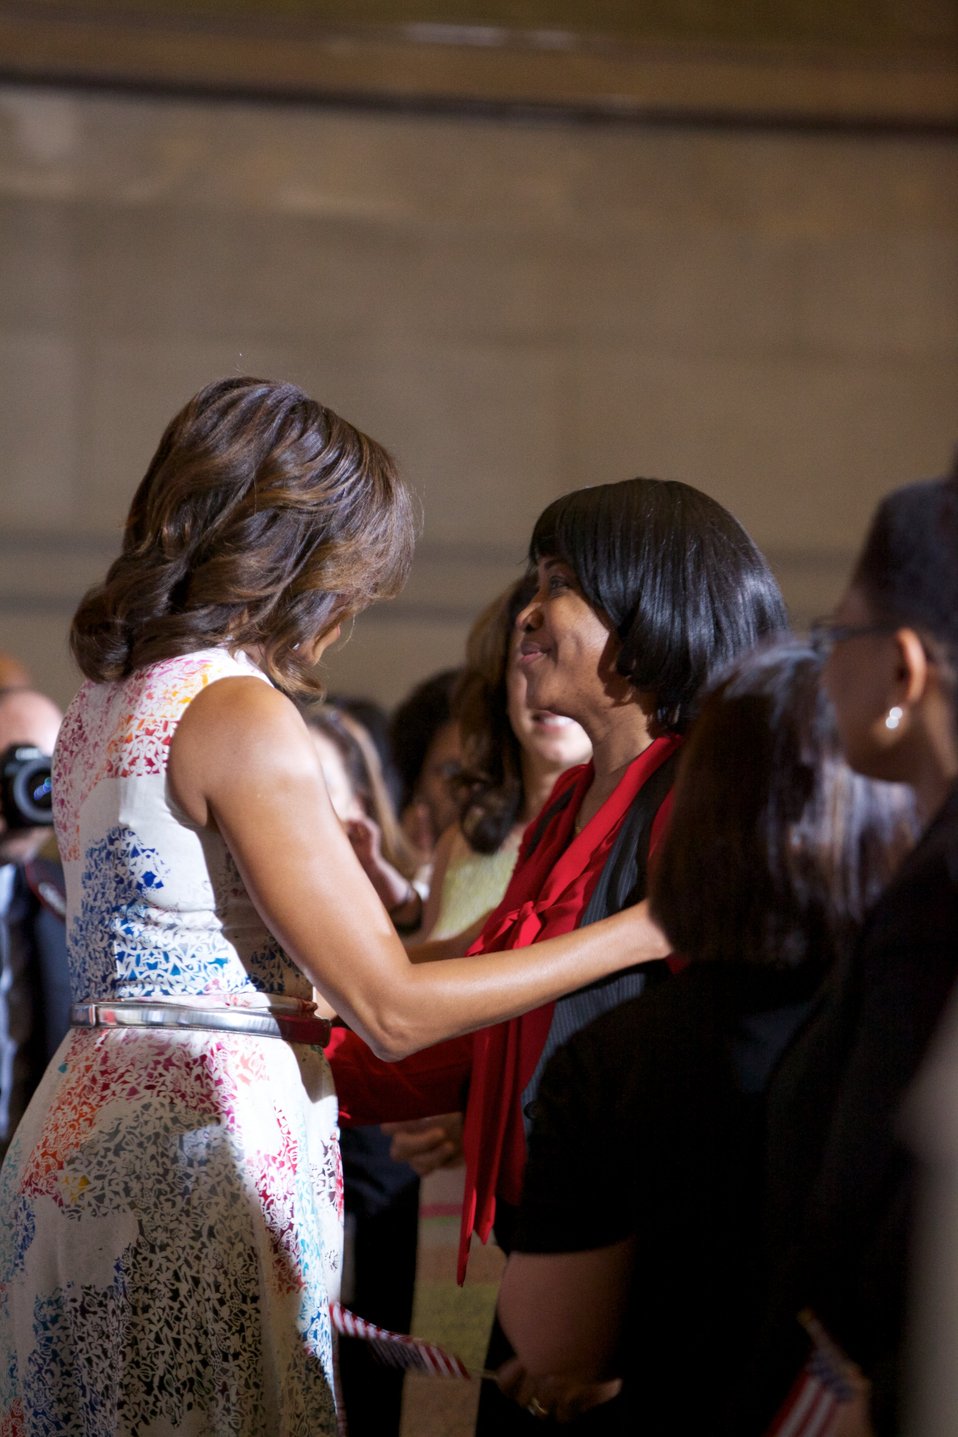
Naturalization Ceremony with Michelle Obama